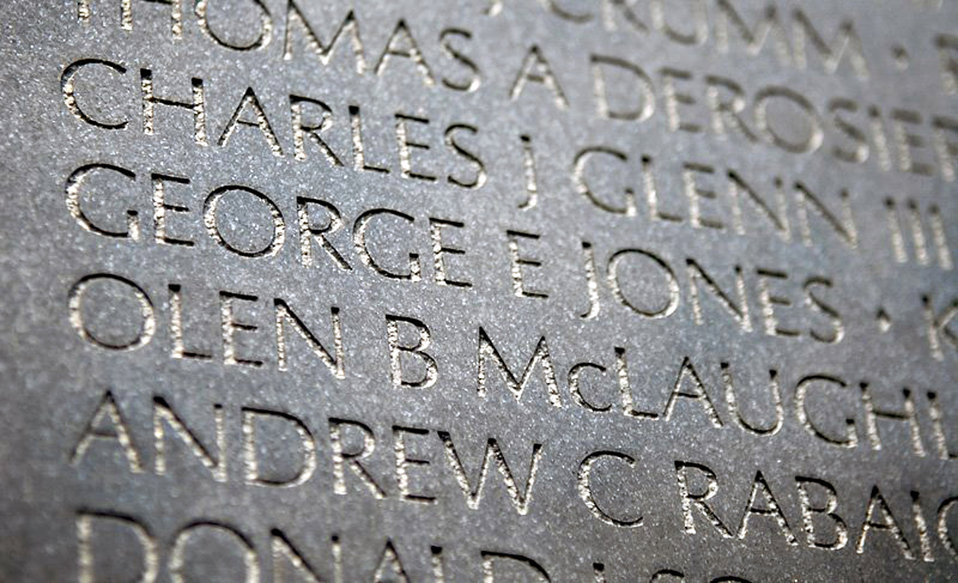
Remembering Lieutenant Jones: An Airman's search for a hero's family

Staff Sgt. Gary Ritter, along with wife, Kristina, and daughter, Cheyenne, visit the gravesite of 1st Lt. George Jones of Aberdeen, Miss., May 28 at Arlington National Cemetery. Sergeant Ritter made the journey to Arlington to meet with the family of Lieutenant Jones, and to give them the POW/MIA bracelet baring the Lieutenant's name that he had kept for 19 years. He gave the bracelet to the youngest daughter of Lieutenant Jones on Memorial Day in honor of his memory. Sergeant Ritter is a combat arms instructor at the Expeditionary Center at Fort Dix, N.J.